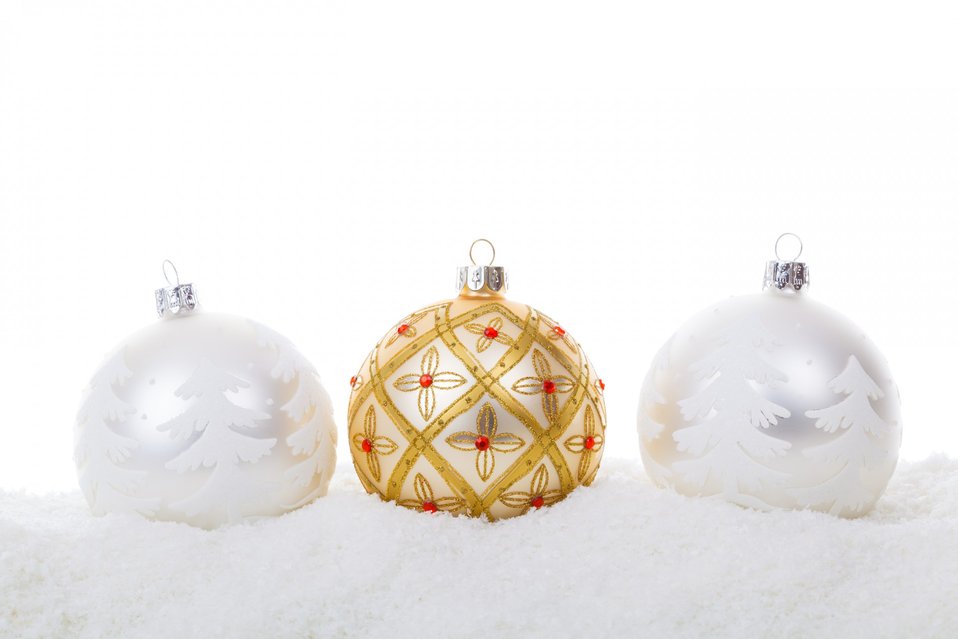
Christmas balls in snow isolated

Three christmas baubles in snow isolated.